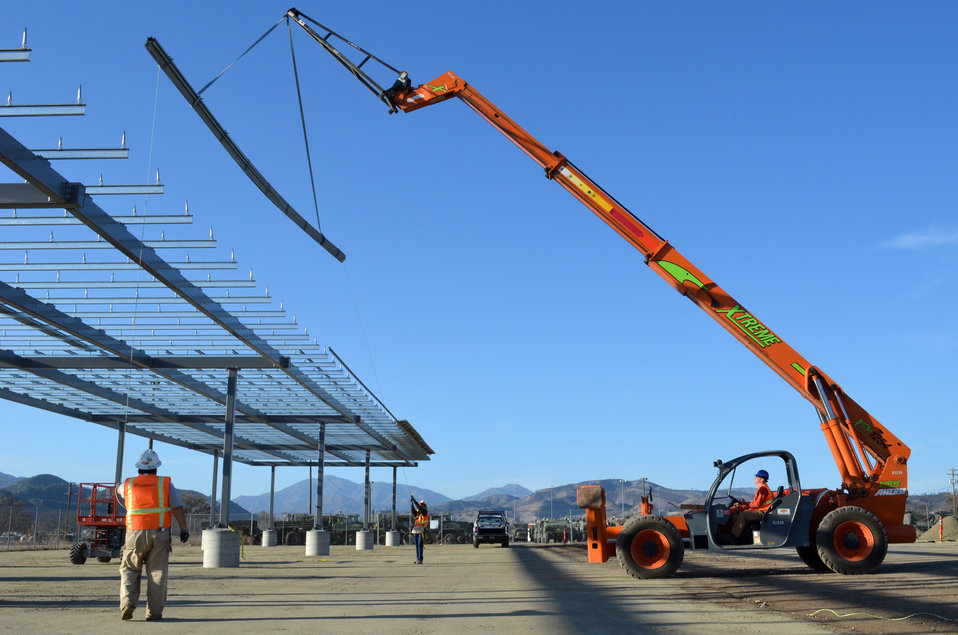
Solar project at Fort Hunter Liggett

Construction workers build the frame for a one-megawatt solar microgrid project at Fort Hunter Liggett, Calif., Dec. 22, 2011. The frame will support photovoltaic panels, said Bob Roy, a project manager with the U.S. Army Corps of Engineers Sacramento District, which is overseeing the project. The grid, scheduled for completion in April 2012, is expected to be the first of four at the post. Once complete, the grid will generate enough energy to power 250 to 300 homes. Along with the energy production, the panel arrays will form a canopy that will shade the majority of the post’s vehicles.